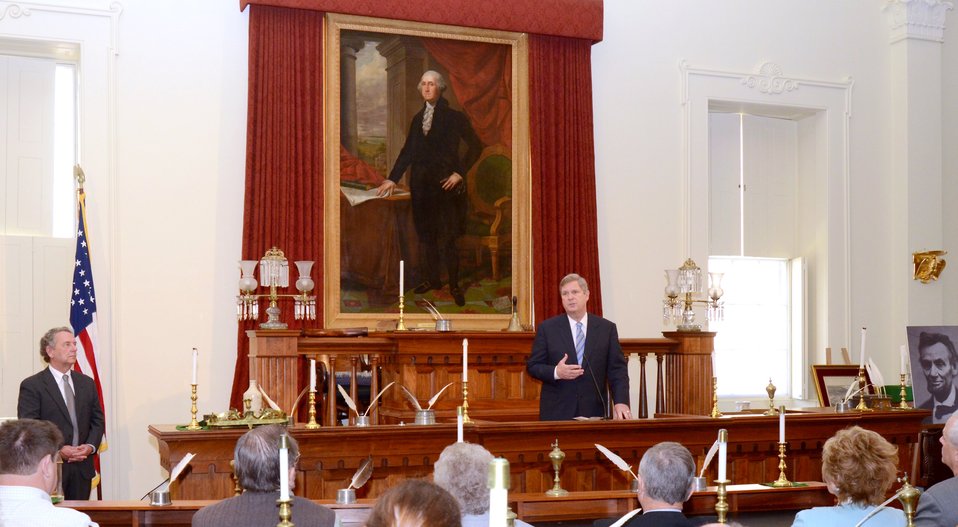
Agriculture Secretary Tom Vilsack speaking at the Old State Capitol in Springfield, IL, to commemorate the 150th Anniversary of the creation of the U.S. Department of Agriculture on Wednesday, November 2, 2011.